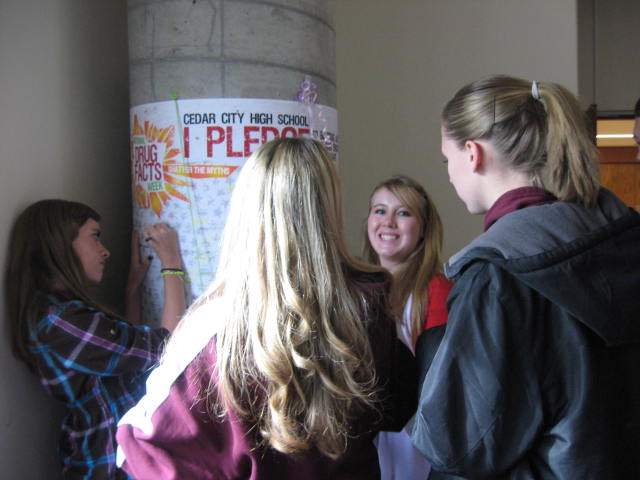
NDFW Assembly in Cedar City, UT

The students signed a pledge to be drug and alcohol free.